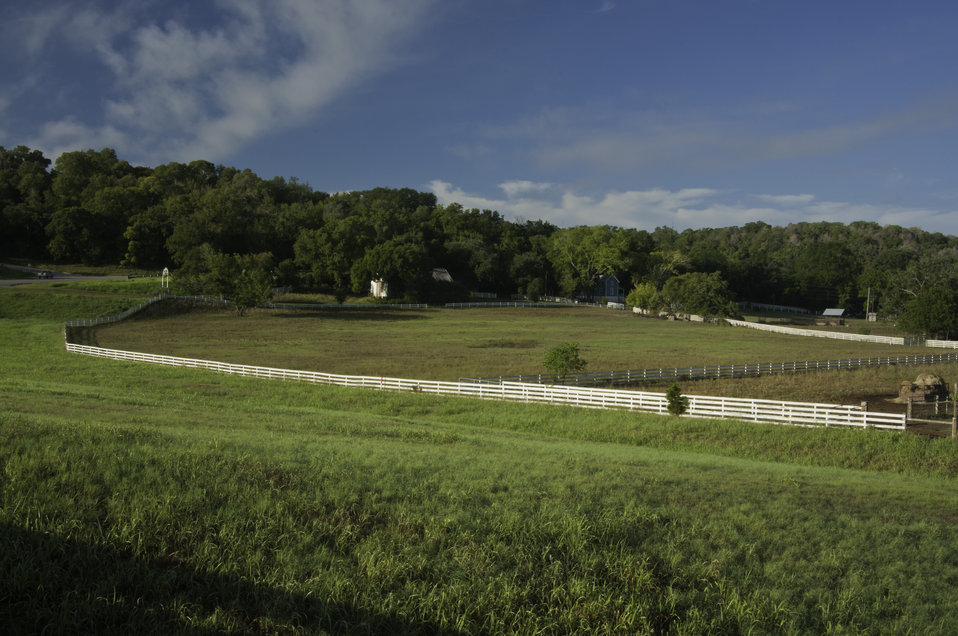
The sun shines down on a Texas farm on Aug. 23, 2013.